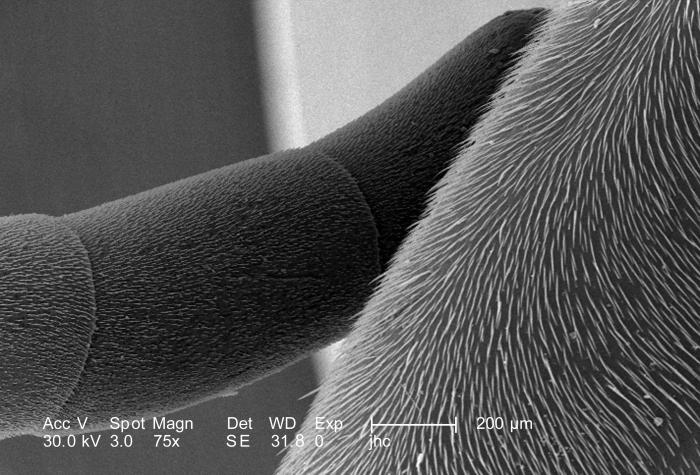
Under a relatively low magnification of only 75X, which is 7.5X greater than PHIL 10097, this scanning electron micrograph (SEM) depicted the distal end of this unidentified hornet's left antenna (background). Found in the suburbs of Decatur, Georgia, this antenna was one of a pair, which along with other sensorial structures such as the hair-like 'setae', seen here coating the antenna's surface, and the surface of the leg (foreground), provided the insect with data indicative of changes encountered in its environment such as chemical, thermal, and tactile queues.The antenna is composed of three main regions: scape, pedicle, and flagellum. The scape, which is not visible in this view, attaches the sensory organ to the head region, and the pedicle joins the distal, jointed, multisegmented flagellum to the scape.